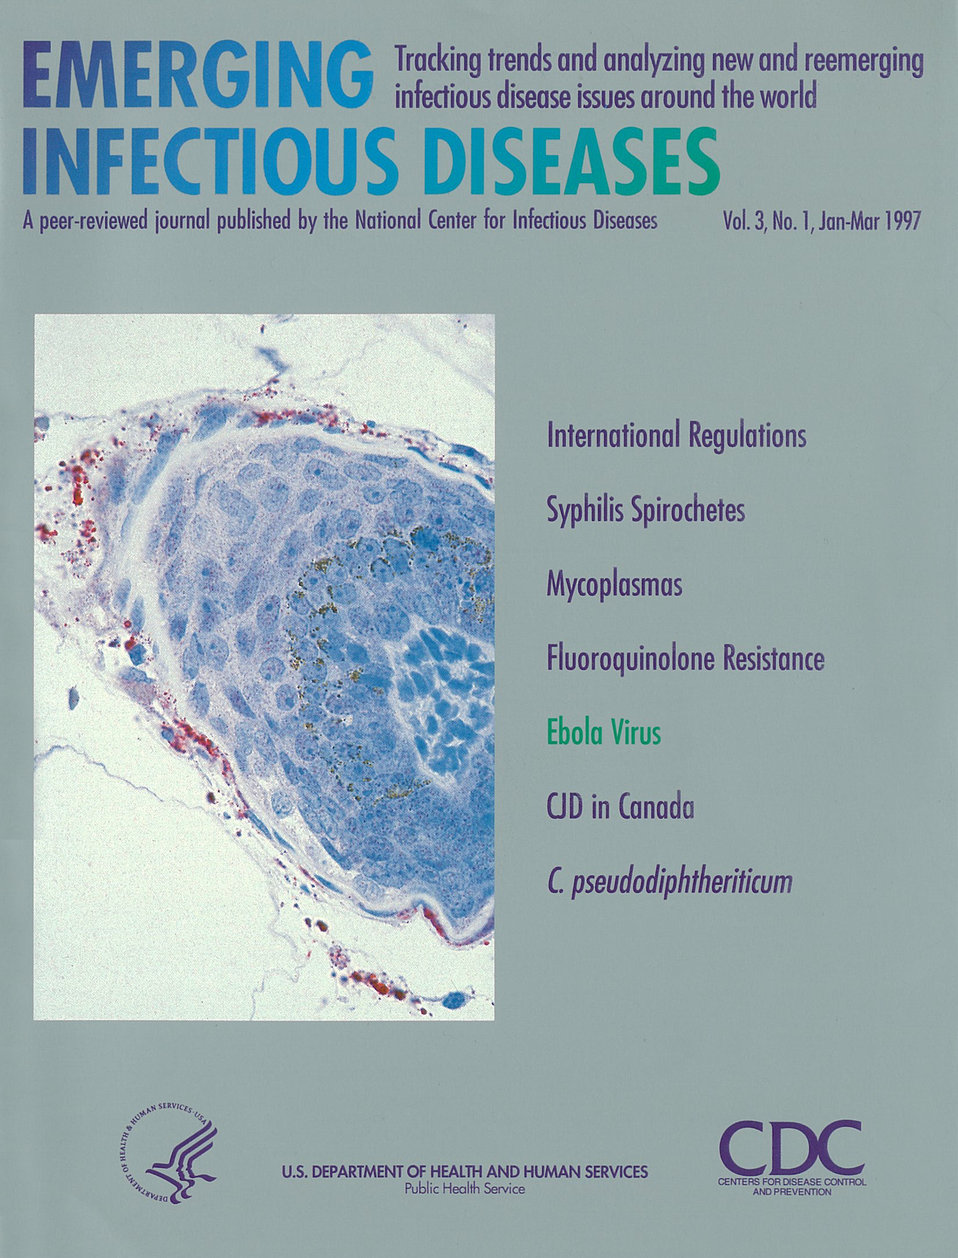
Emerging Infectious Diseases (EID) cover artwork for Volume 3, Number 1, January-March 1997 issue.